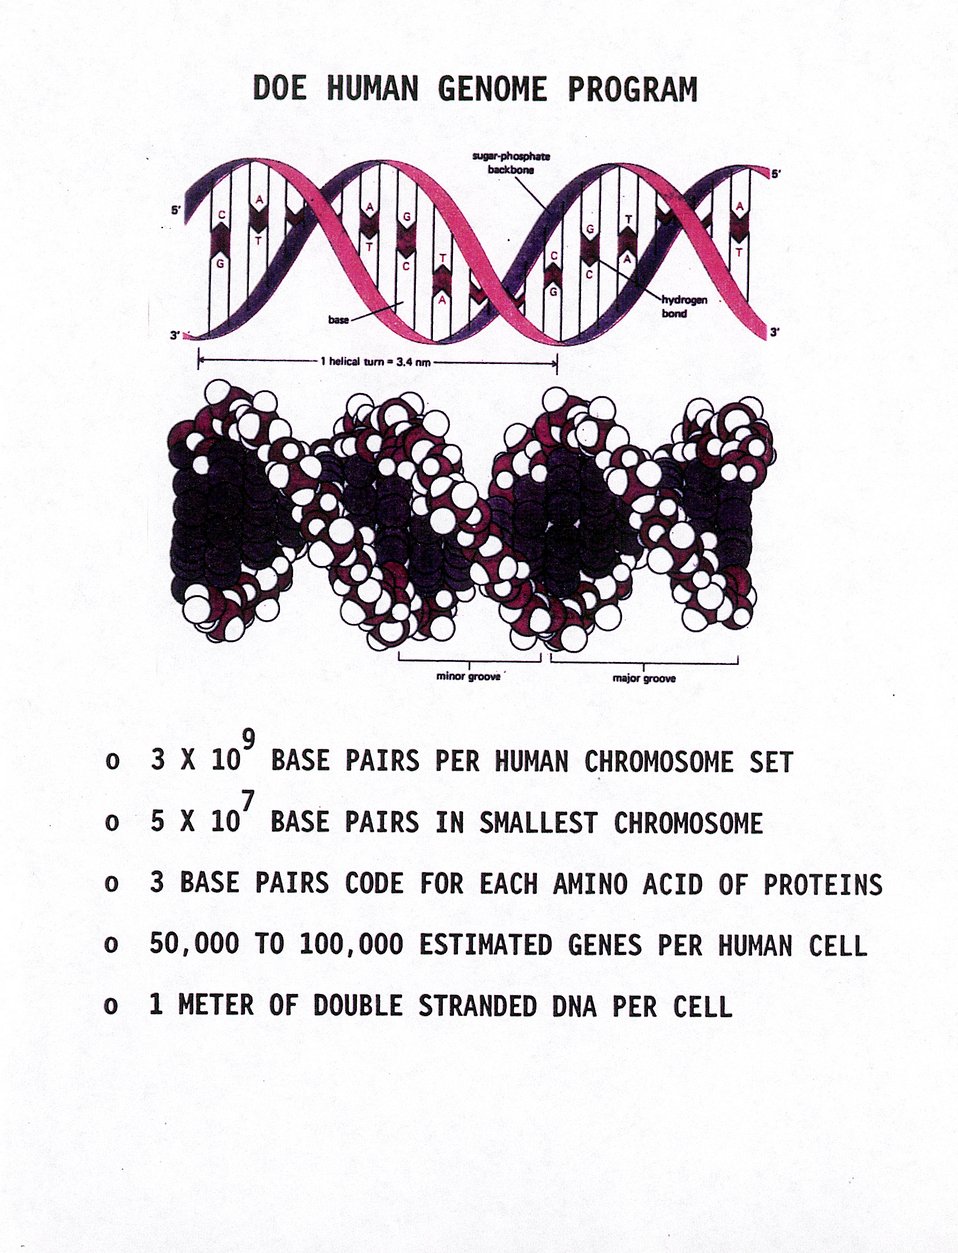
DOE Human Genome Program